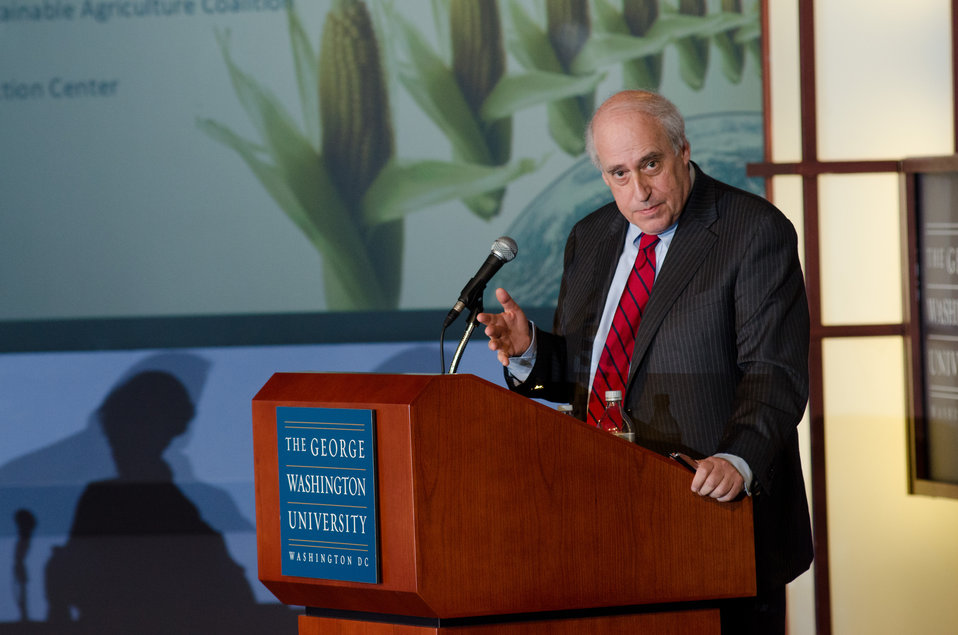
Former Agriculture Secretary, Congressman and moderator Dan Glickman helps facilitate a question during the “Shaping the Farm Bill for a Sustainable Future” Forum in the Jack Morton Auditorium, at the Trachtenberg School of Public Policy and Public Administration, on the George Washington University campus in Washington, D.C., on Thursday, March 1, 2012.